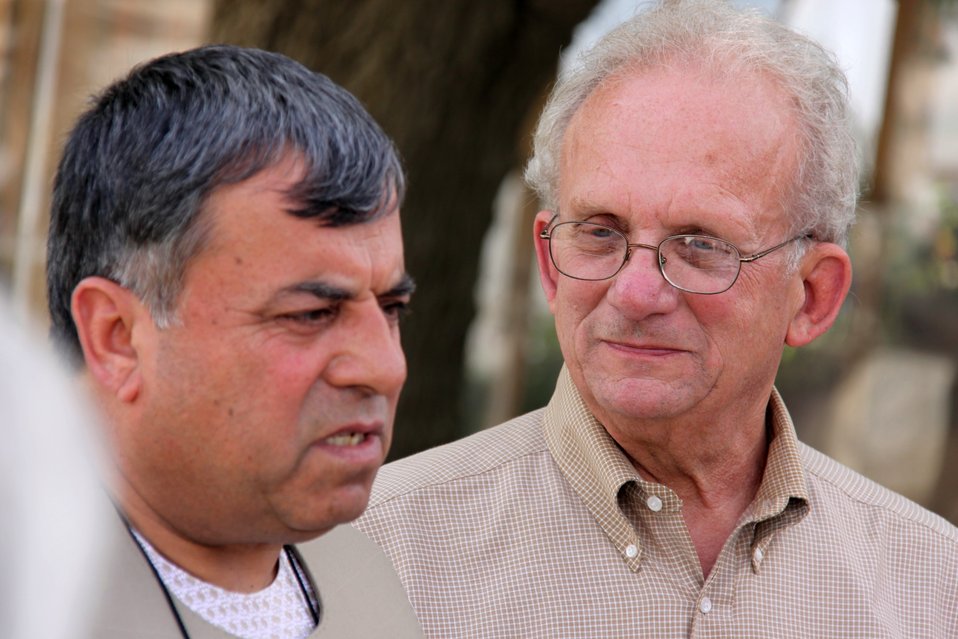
Meeting with Local Leaders in Kandahar